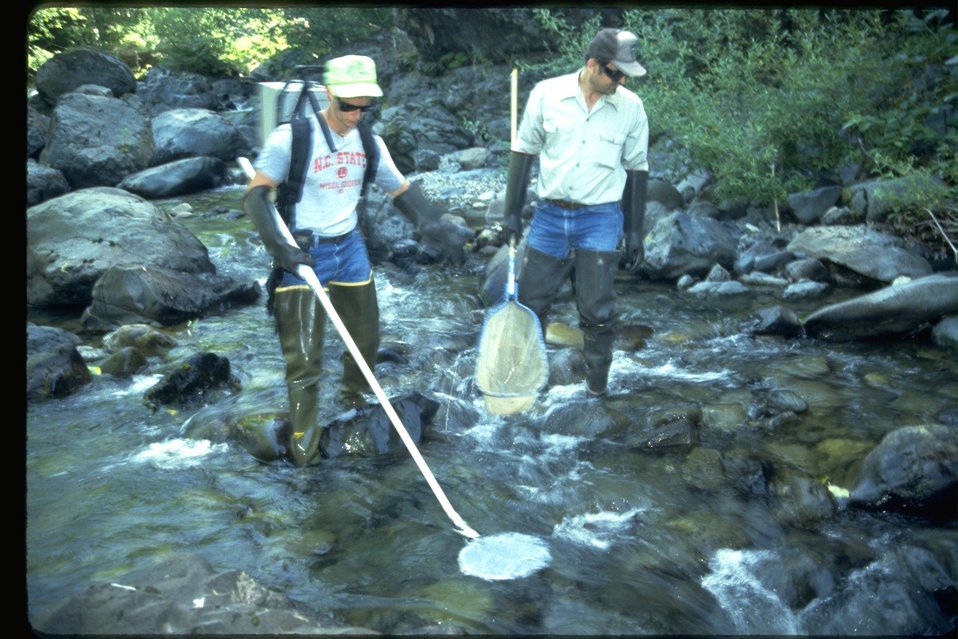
Elijah and Jerry using electro shocker for fish population study.